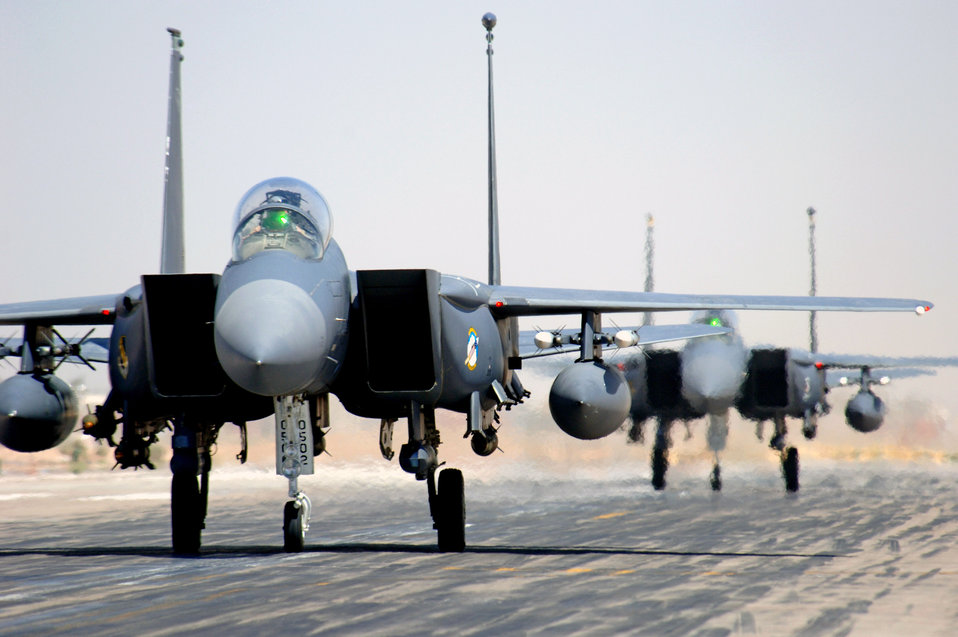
Feb. 2 airpower summary: F-15Es deter anti-Afghan forces

F-15E Strike Eagles taxi in at Joint Base Balad, Iraq, after an Operation Iraqi Freedom mission. The F-15E is a dual-role fighter designed to perform air-to-air and air-to-ground missions as well as provide armed aerial overwatch. The fighters are deployed from Seymour Johnson Air Force Base, N.C.